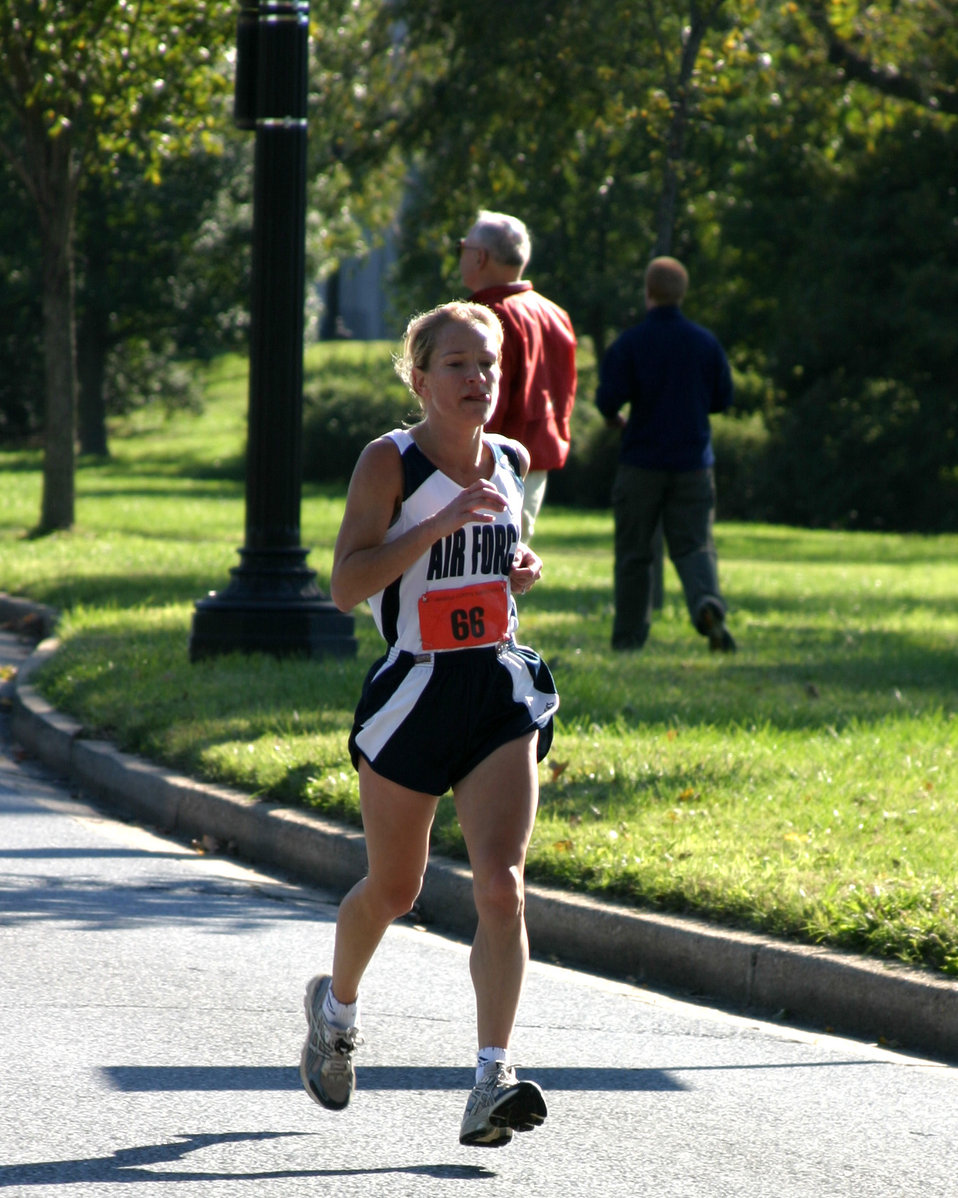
Race to the finish

WASHINGTON -- Capt. Jill Metzger runs in the Armed Forces Marathon Championship here. She finished with a time of 3 hours, 6 minutes and 39 seconds. She finished 149th out of 27,891 runners, and she was the 12th female to finish the race. The Captain is the 347th Military Personnel Flight commander at Moody Air Force Base, Ga.